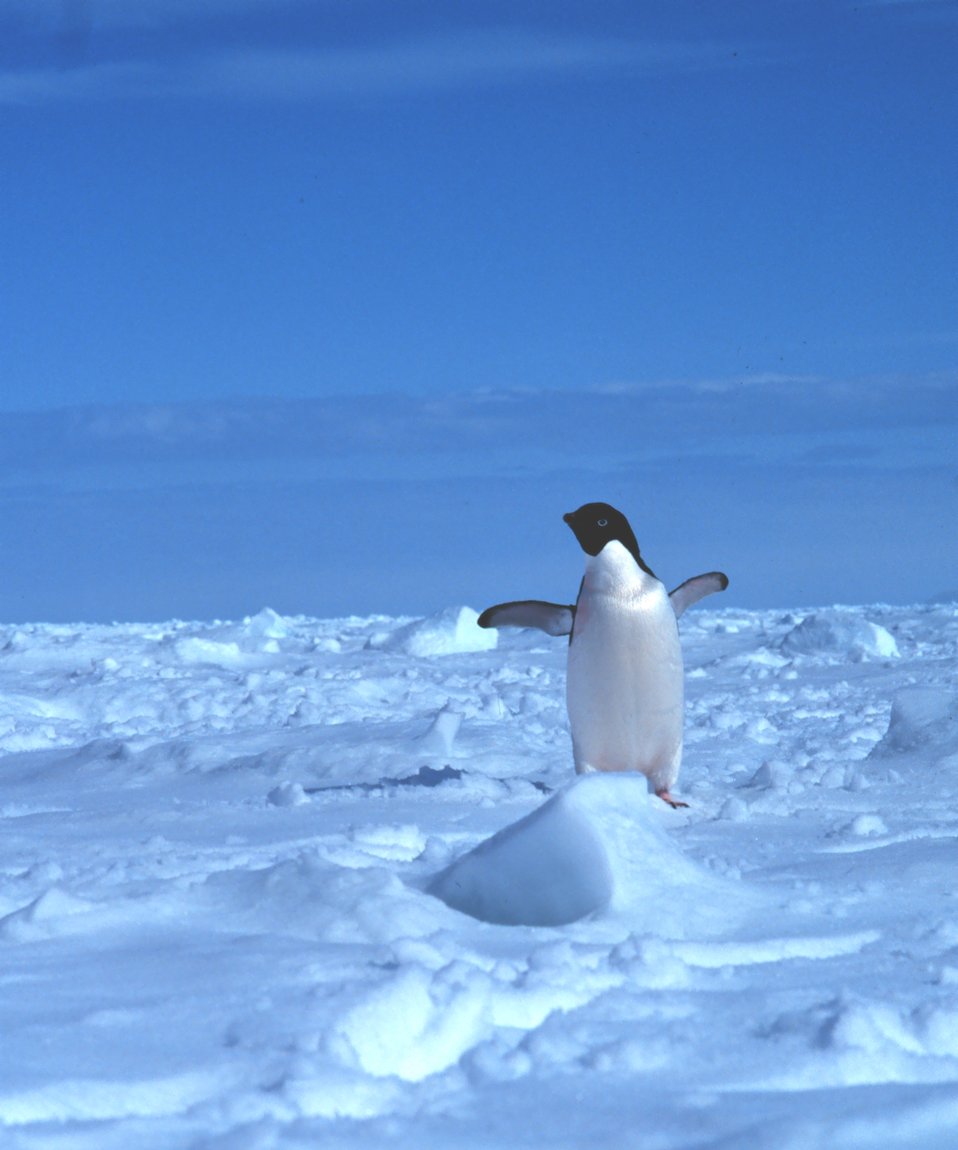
Adelie penguin on the sea ice.